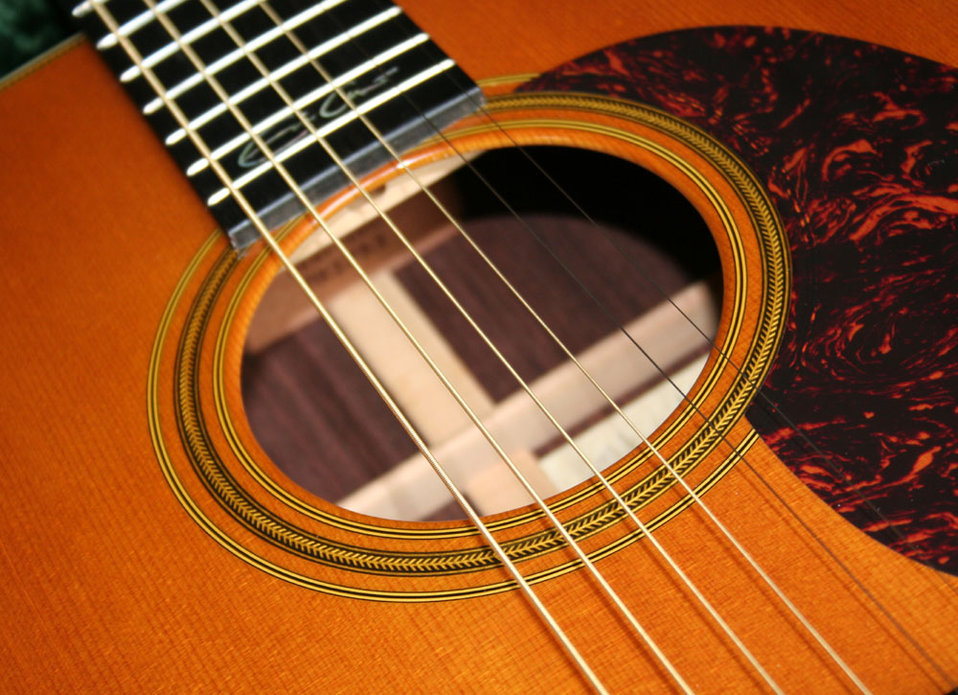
Front detail of CF Martin's very popular 000-28EC model, showing the solid Sitka spruce soundboard, finely inlaid herringbone rosette and their instantly recognisable, much-copied, trademark 'comma-shaped' pickguard. The correct title is 000-28-EC (Eric Clapton)